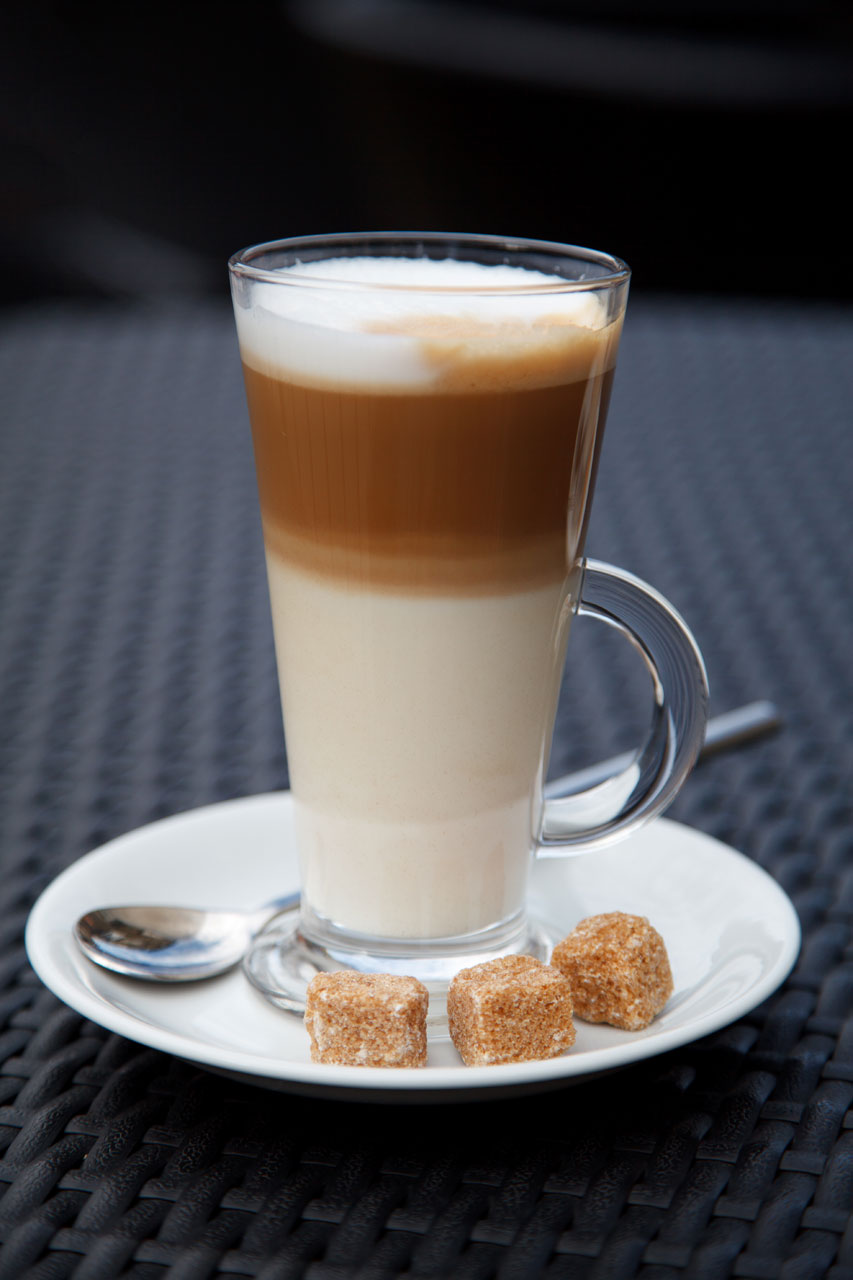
Coffee latte with brown sugar on the table.